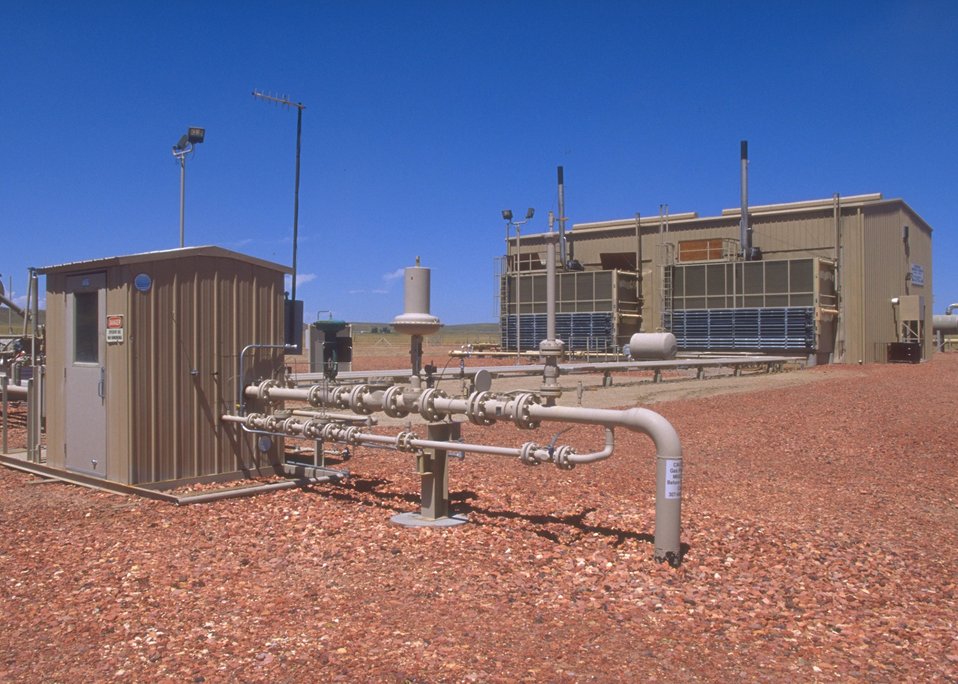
Facilities used in the production of coal bed methane, Buffalo Field Office.